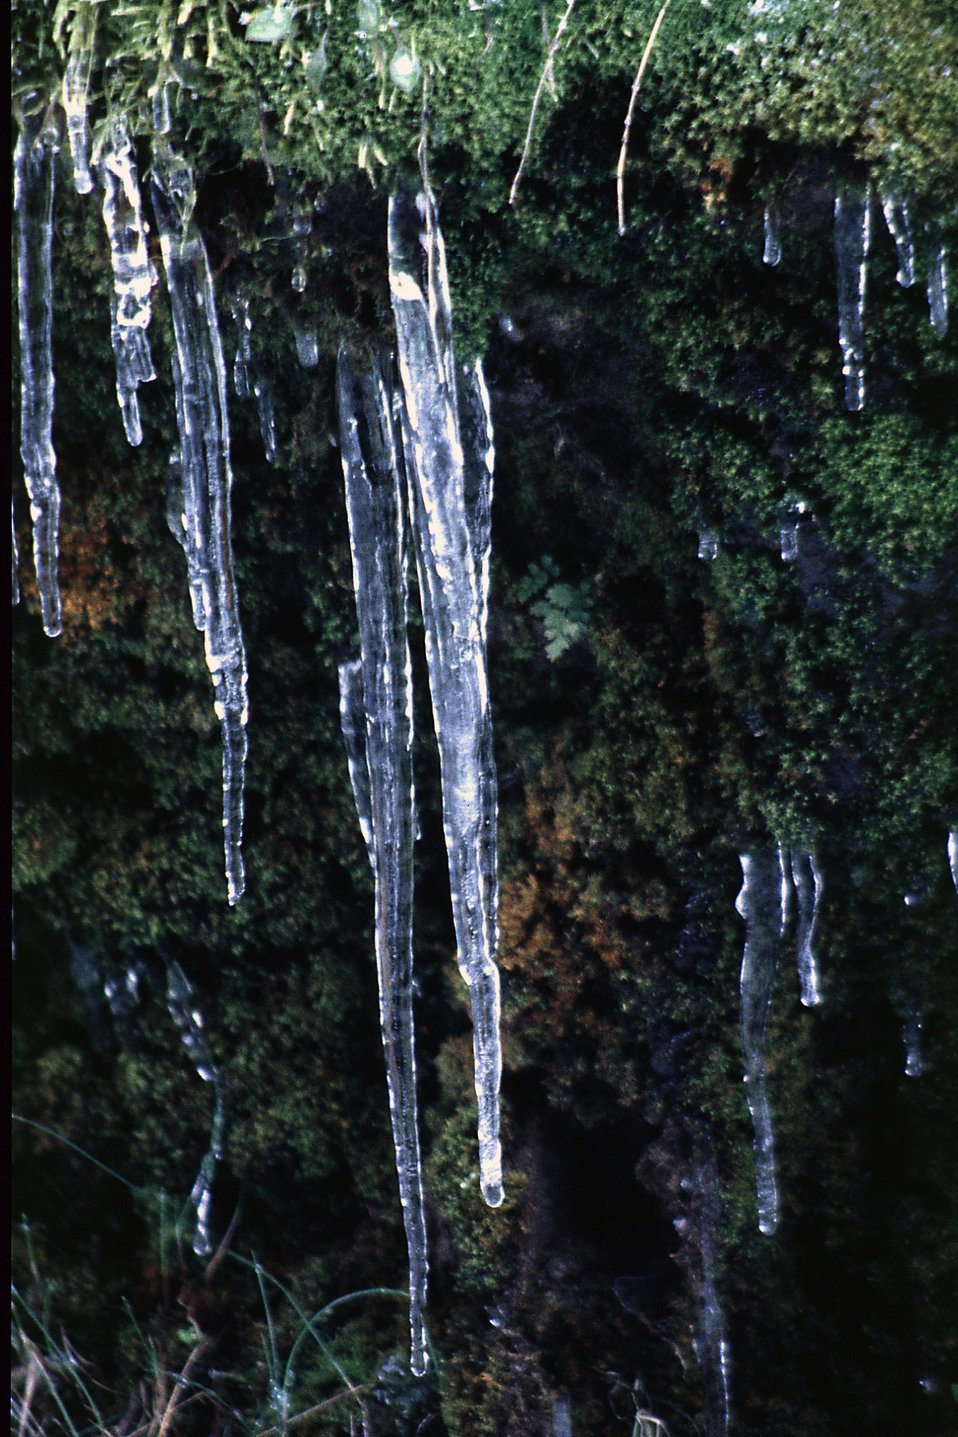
Mid Winter forest scene in the Mollala Corridor.